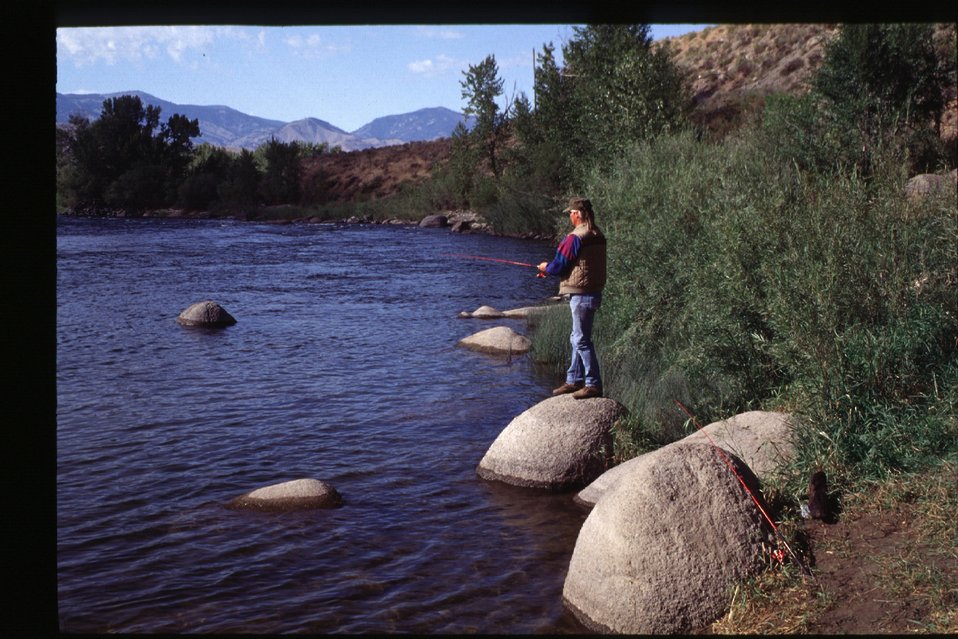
Fishing on river Salmon Field Office UCSC Upper Columbia Salmon Field Office